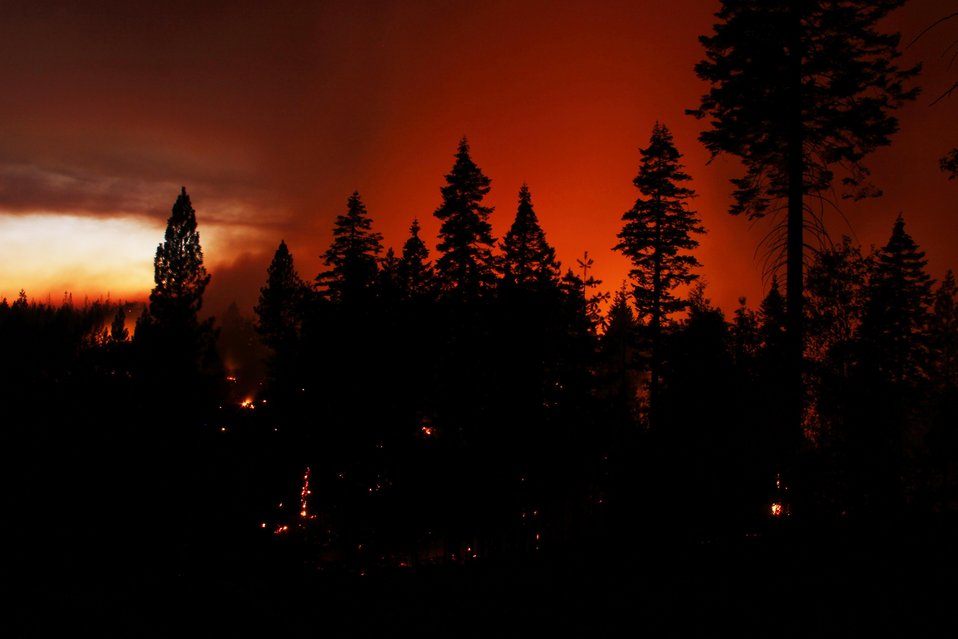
The Rim Fire in the Stanislaus National Forest near in California began on Aug. 17, 2013 and is under investigation. The fire has consumed approximately 235,841 acres and is 70% contained.